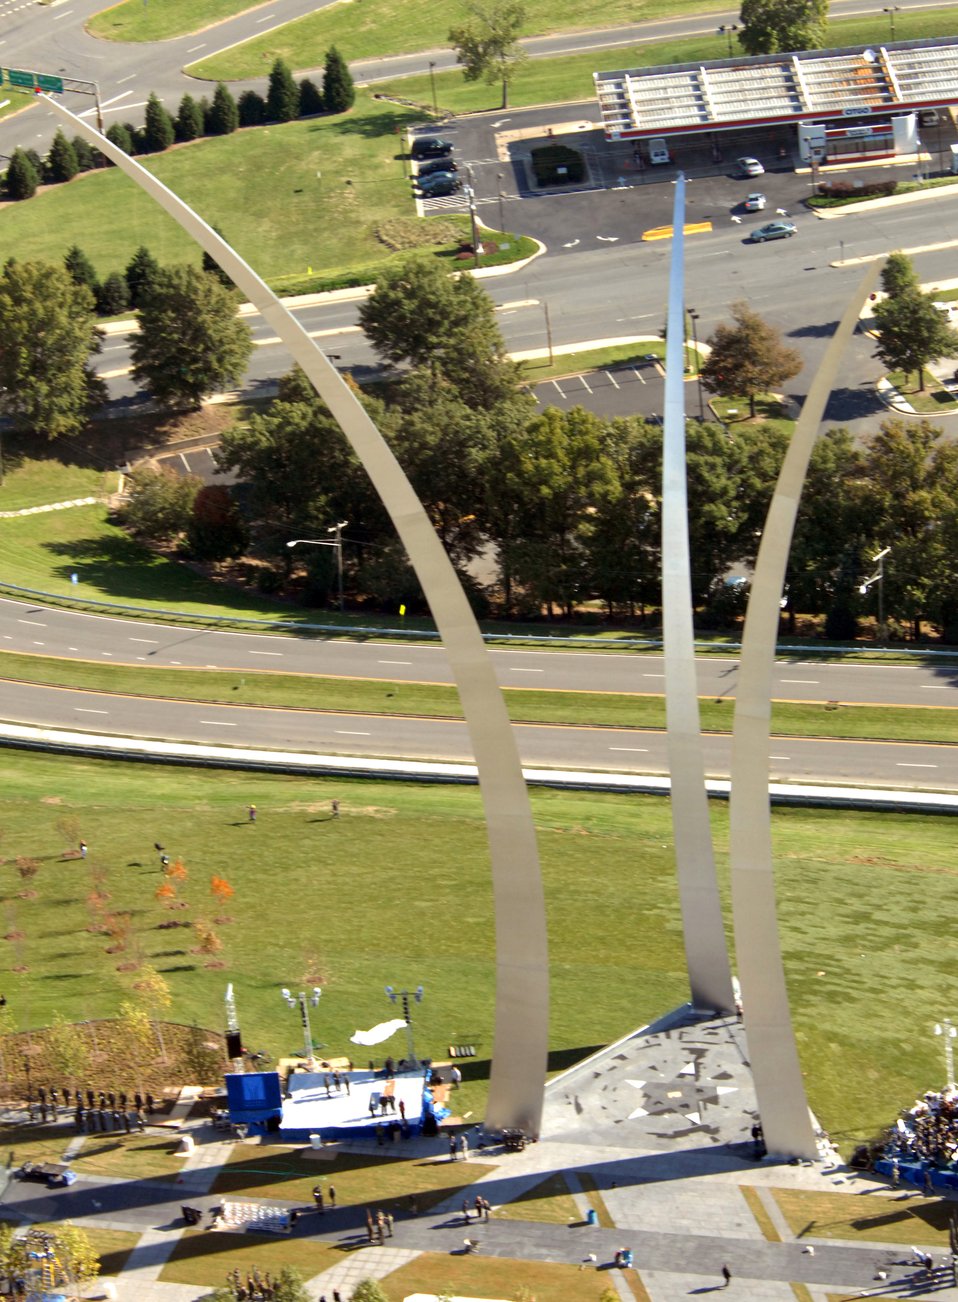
AF Memorial: Warming up for the big show

An aerial view of the Air Force Memorial that overlooks Arlington National Cemetery in Virginia Oct. 13. The memorial will be officially dedicated during a ceremony Oct. 14. An Air Force open house will be held near the Pentagon in conjunction with the dedication ceremony that will feature performances by the U.S. Air Force Band, the U.S. Air Force Honor Guard drill team, and a concert by country music performer LeeAnn Womack.